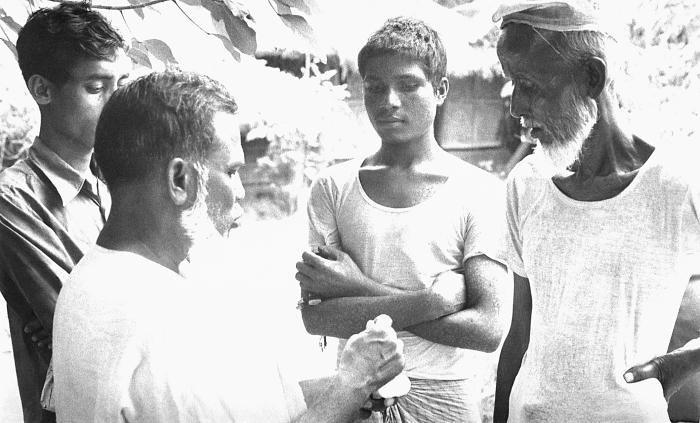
Mujibur Rahman, an elder statesman among smallpox team leaders, was shown here, as he was demonstrating the proper method for administering a smallpox vaccination using a bifurcated needle. After having been dipped into the vaccine solution, the bifurcated needle was used to prick the skin a number of times in order to allow the vaccinia virus to penetrate the skin, thereby, inoculating the vaccinee.If the vaccination is successful, a red and itchy bump develops at the vaccination site in three or four days. In the first week, the bump becomes a large blister, fills with pus, and begins to drain. During the second week, the blister begins to dry up and a scab forms. The scab falls off in the third week, leaving a small scar. People who are being vaccinated for the first time have a stronger reaction than those who are being revaccinated.